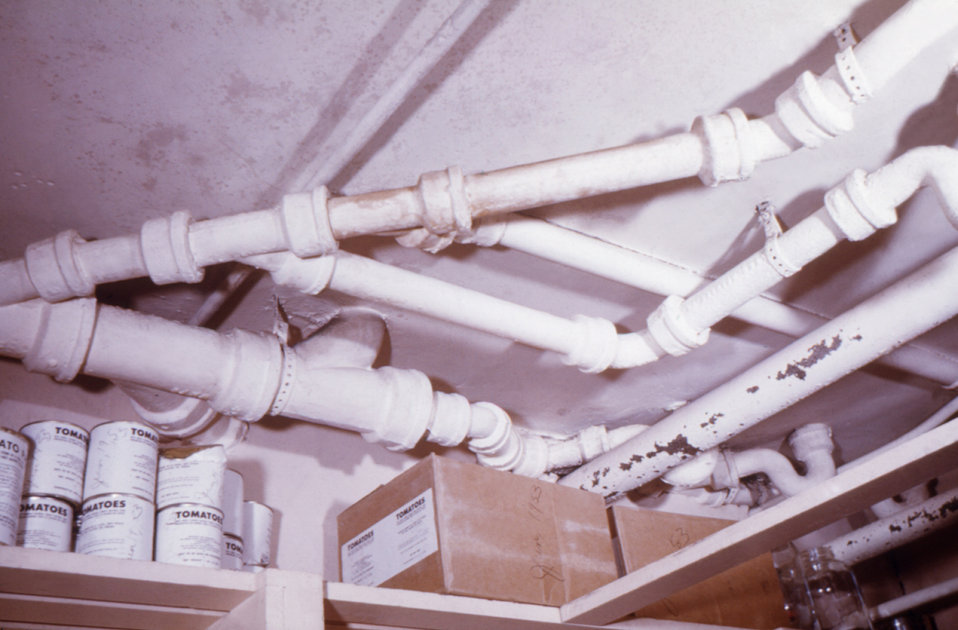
Note the potential for food contamination due to the overhead sewer pipes in a food storage area of a migrant labor camp.